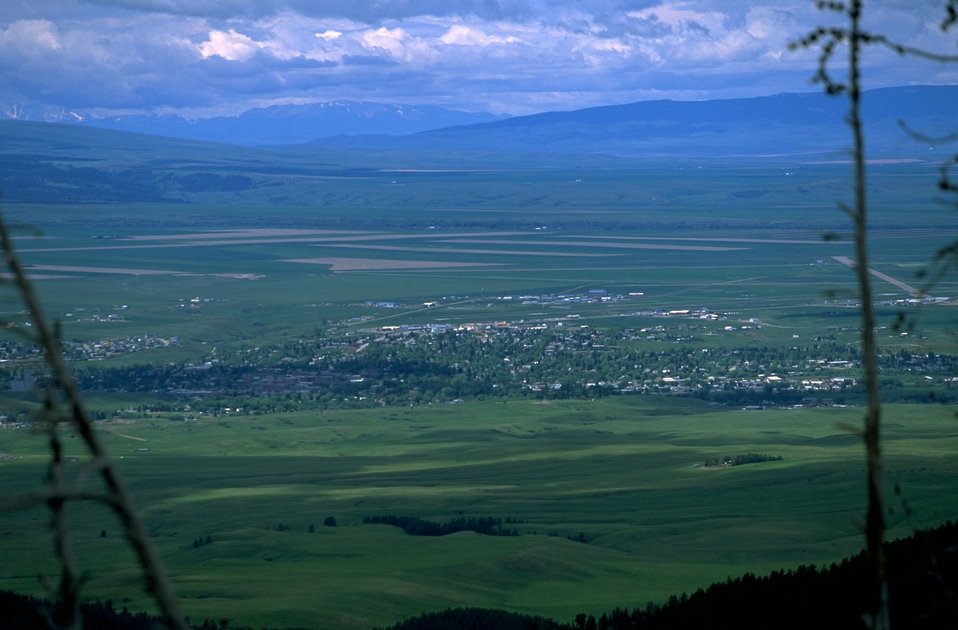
Looking down on Lewistown, Montana and the Montana plains